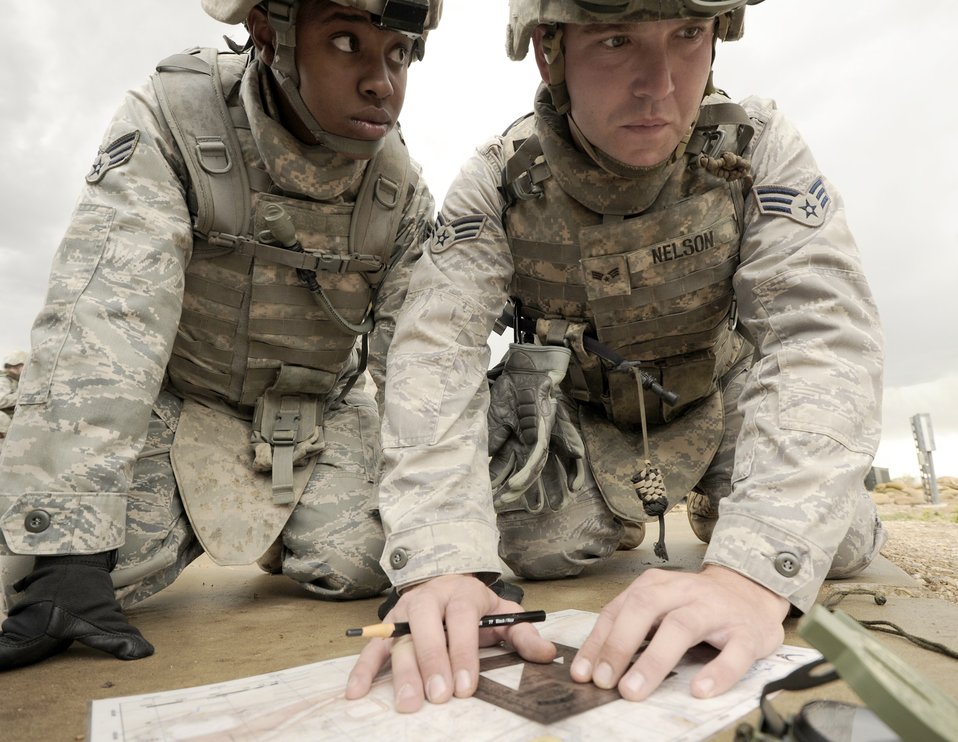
Combat Readiness Training

Airmen participate in land navigation drills during the 75th Security Forces Combat Readiness Training course Sept. 22, 2010, at Hill Air Force Base, Utah. The course teaches Airmen basic tactical movements, land navigation and self aid buddy care.